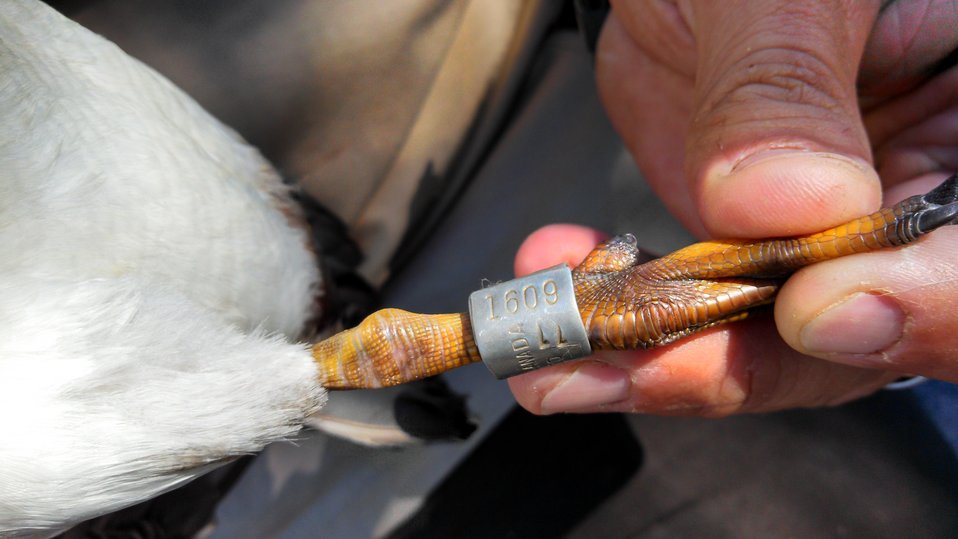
Old Recapture Woodduck Band

Banding waterfowl on Bowdoin NWR
Wood Duck leg